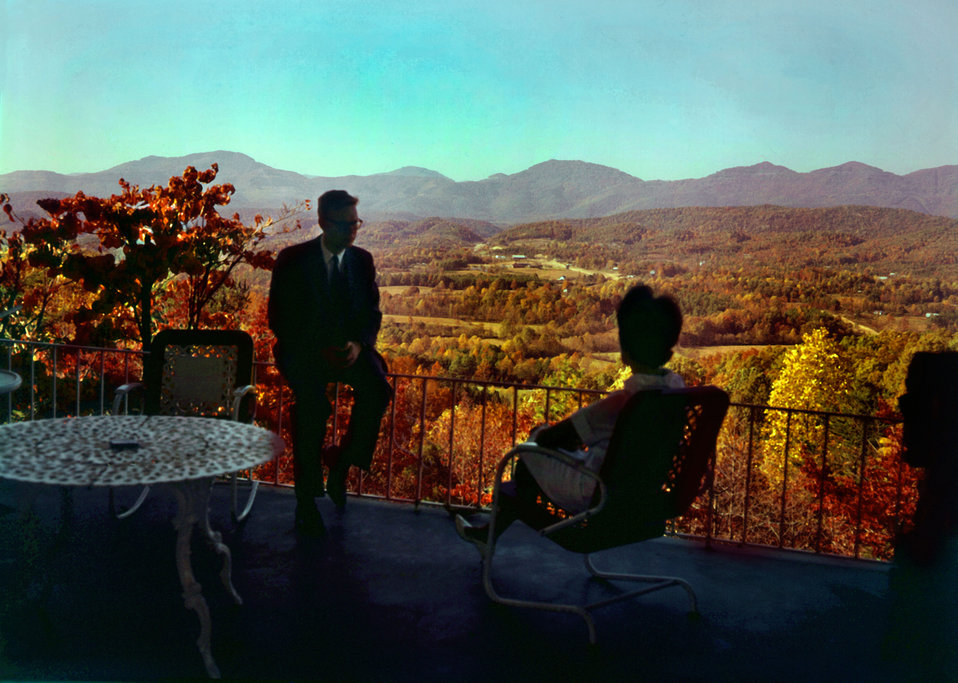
View Oak Ridge

DOE photo by Ed Westcott 1960s Oak Ridge Tennessee